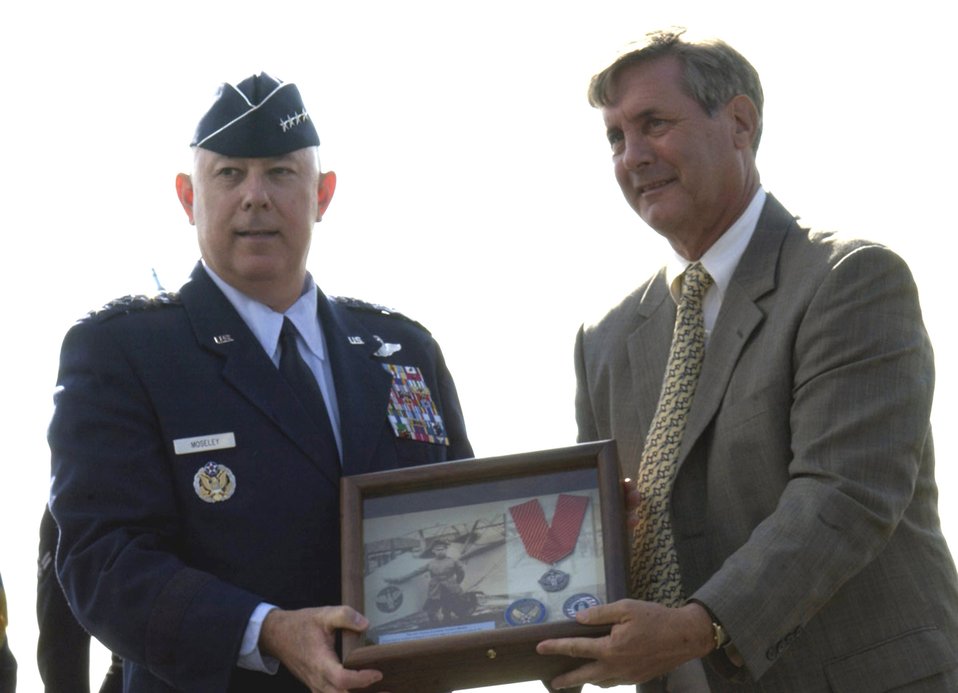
Air Force Combat Action Medal

Air Force Chief of Staff T. Michael Moseley hands a shadowbox of the Air Force Combat Action Medal to Tom Gilpin, the grandson of Air Force pioneer Brig. Gen. William